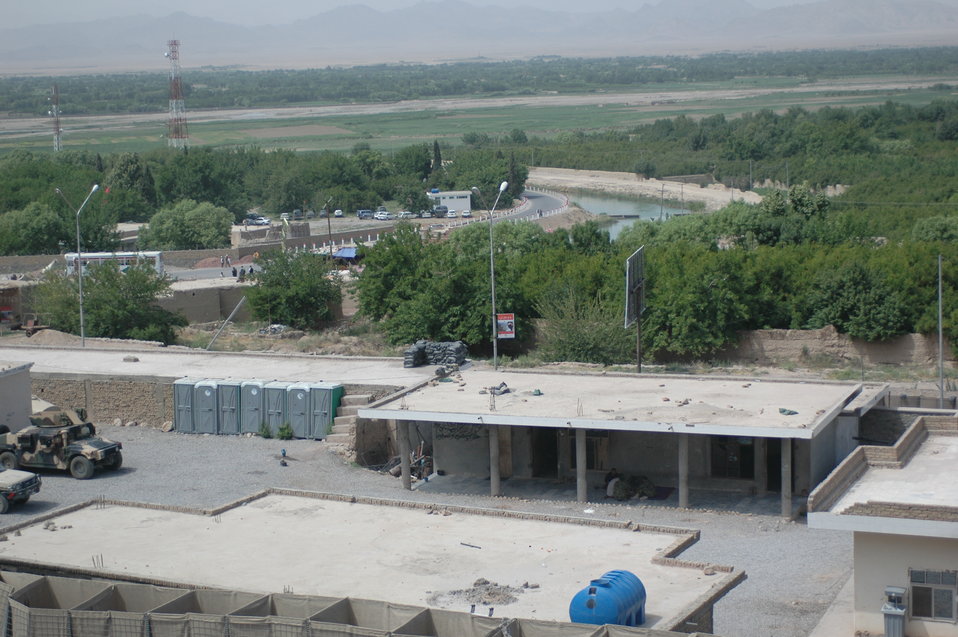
Dr Shah Visits Kandahar April 9, 2010